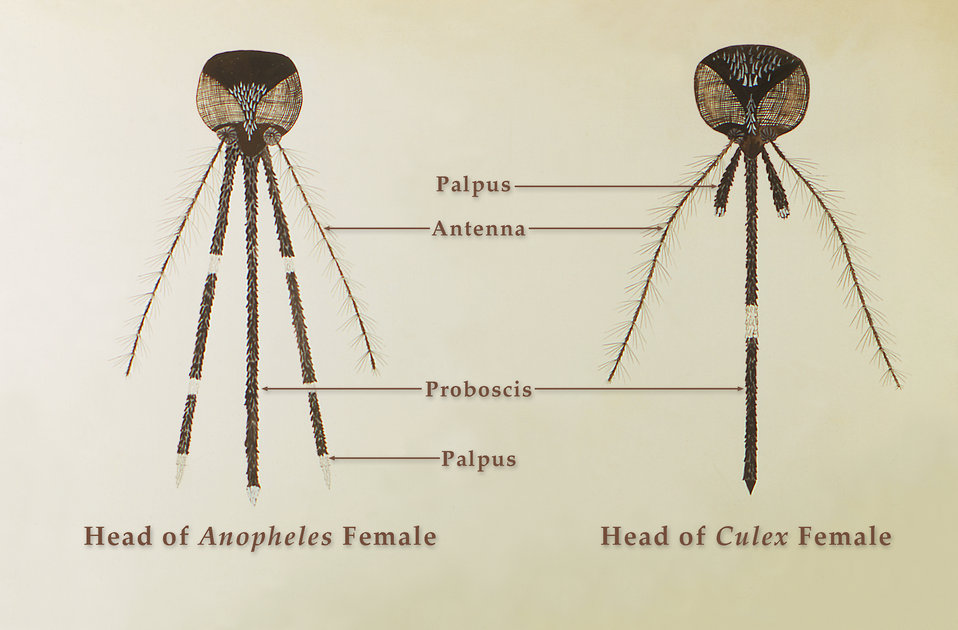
This illustration reveals the morphologic differences between an Anopheles specie female mosquito and that of a female Culex specie. The Anopheles sp. female possesses longer palpi, and no light-colored band along the shaft of the proboscis, but a lightly-pigmented tip, whereas, the palpi on the Culex sp. female are very short, and the shaft of the proboscis has a single, lightly-pigmented band, and no light-colored tip.